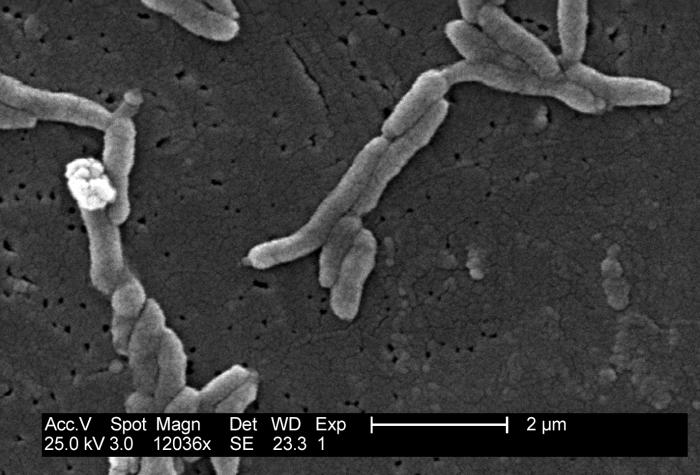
This scanning electron micrograph depicts a grouping of Gram-negative Flexispira rappini bacteria, magnified 12,036x.